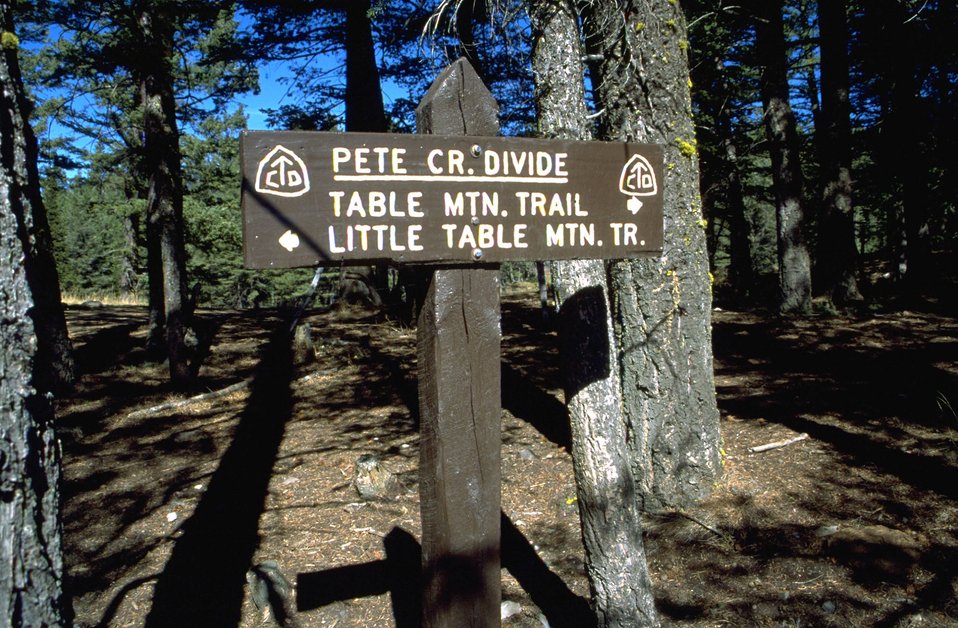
Sign marking trails intersecting the continental divide trail